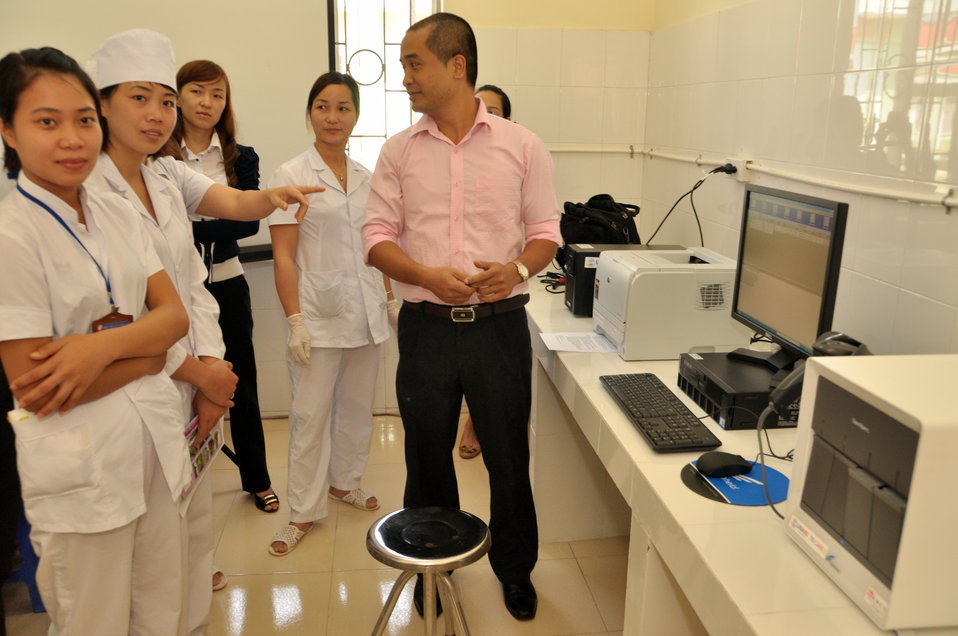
USAID supports new rapid detection TB equipment